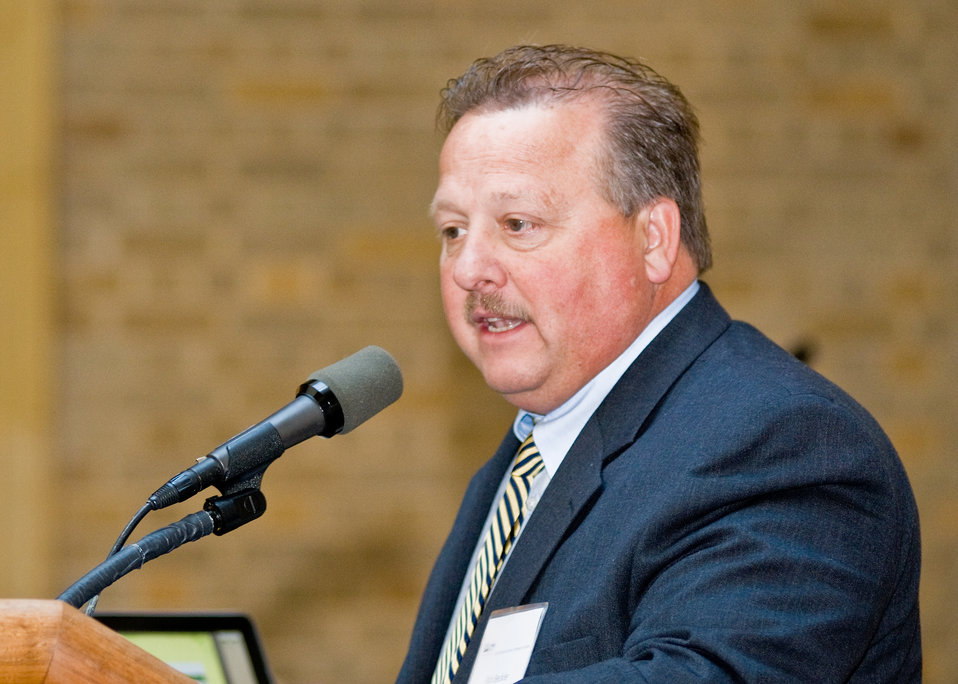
Rick Beckler, Director of Hospitality, Sacred Heart Hospital, Eau Clair, Wisconsin spoke of the decision of Sacred Heart Hospital in Eau Claire, Wisconsin to form the Producers and Buyers Cooperative, a rural cooperative to source food locally for the hospital supporting family farms during the celebration of October as National Co-op Month at an event at the Department of Agriculture, Tuesday, October 5, 2010 in Washington, DC. USDA Photo 10di1517-42 by Bob Nichols.